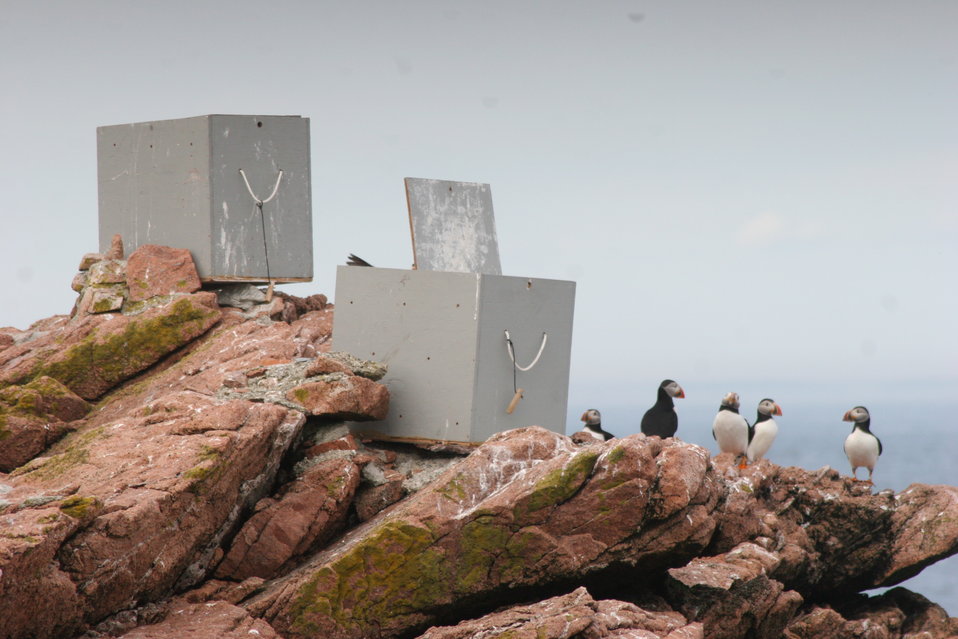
Puffins Near Capturing Boxes